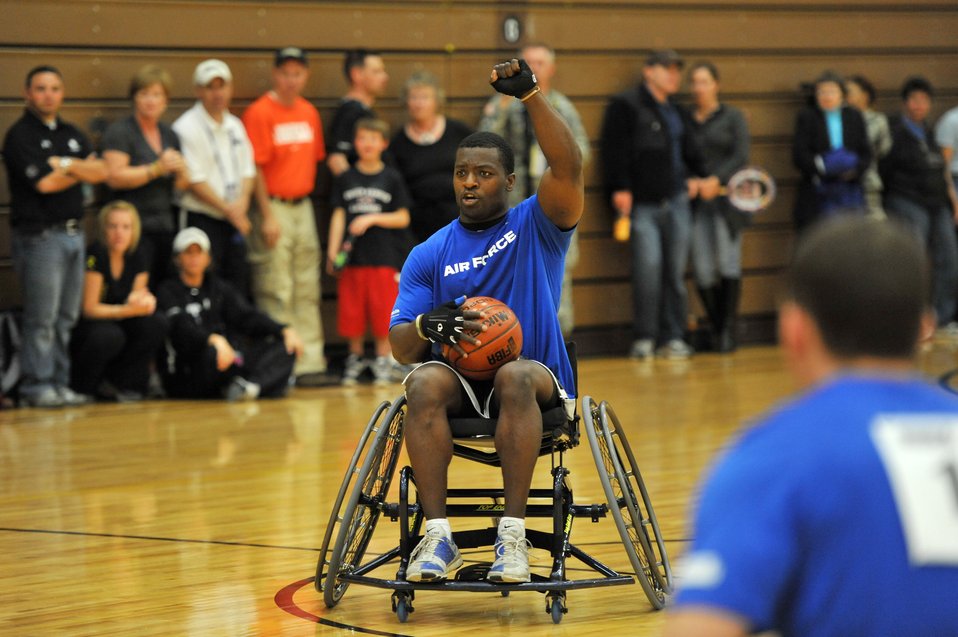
basketball prelims

Matt Sanders, a member of the Air Force wheelchair basketball team, competes May 18, 2011, during the Warrior Games at the U.S. Olympic Training Center in Colorado Springs, Colo. Some 200 wounded warriors and disabled veterans from all of the military services competed in paralympic-style athletic events May 16 to 21.